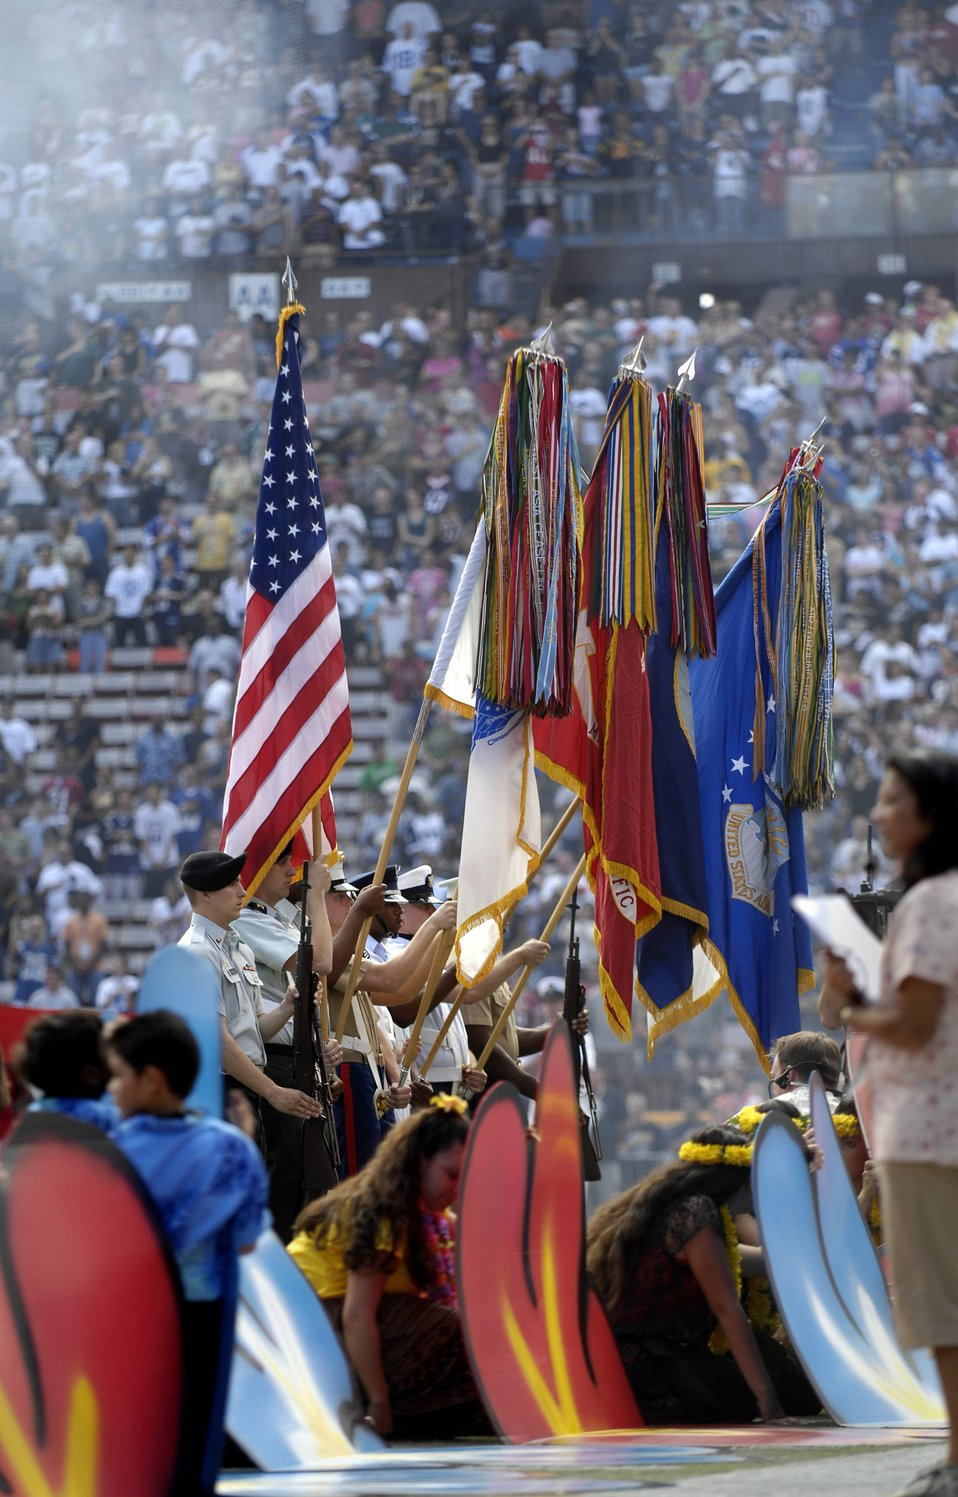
Airmen support Pro Bowl

A joint service honor guard presents the colors during the national anthem at the 2007 Pro Bowl Feb. 10 at Aloha Stadium in Hawaii. Servicemembers from all branches of the military in Hawaii participated in the Pro Bowl activities. The Pro Bowl brings together the top players in the American and National conferences of the National Football League.